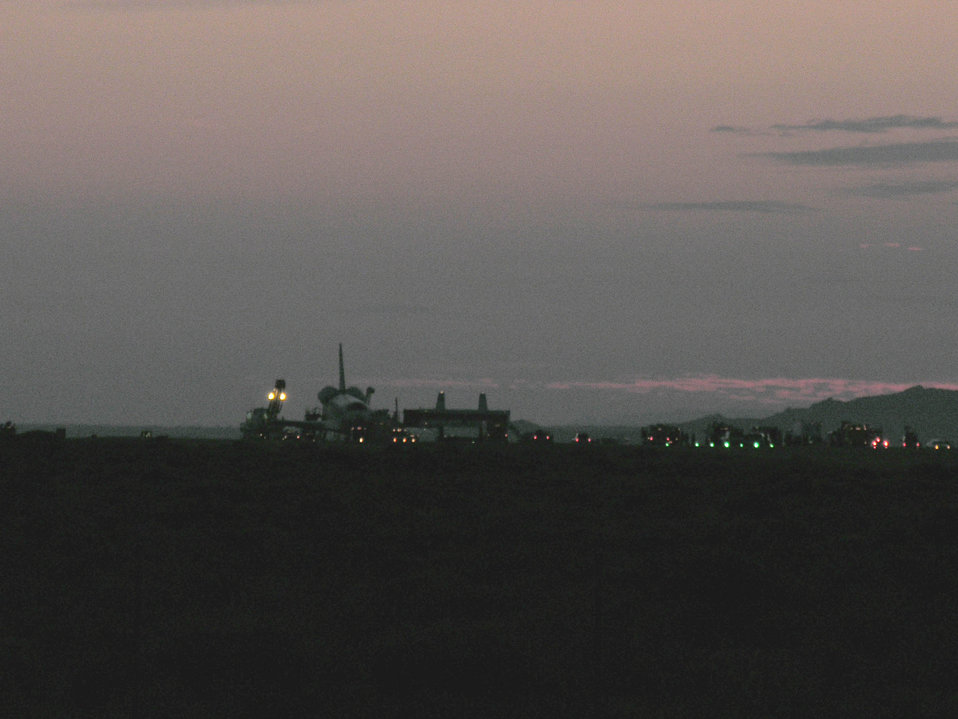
Safe landing

EDWARDS AIR FORCE BASE, Calif. -- Space Shuttle Discovery sits at the end of the runway here just minutes after its safe landing Aug. 9. The shuttle returned from a 14-day mission orbiting Earth.